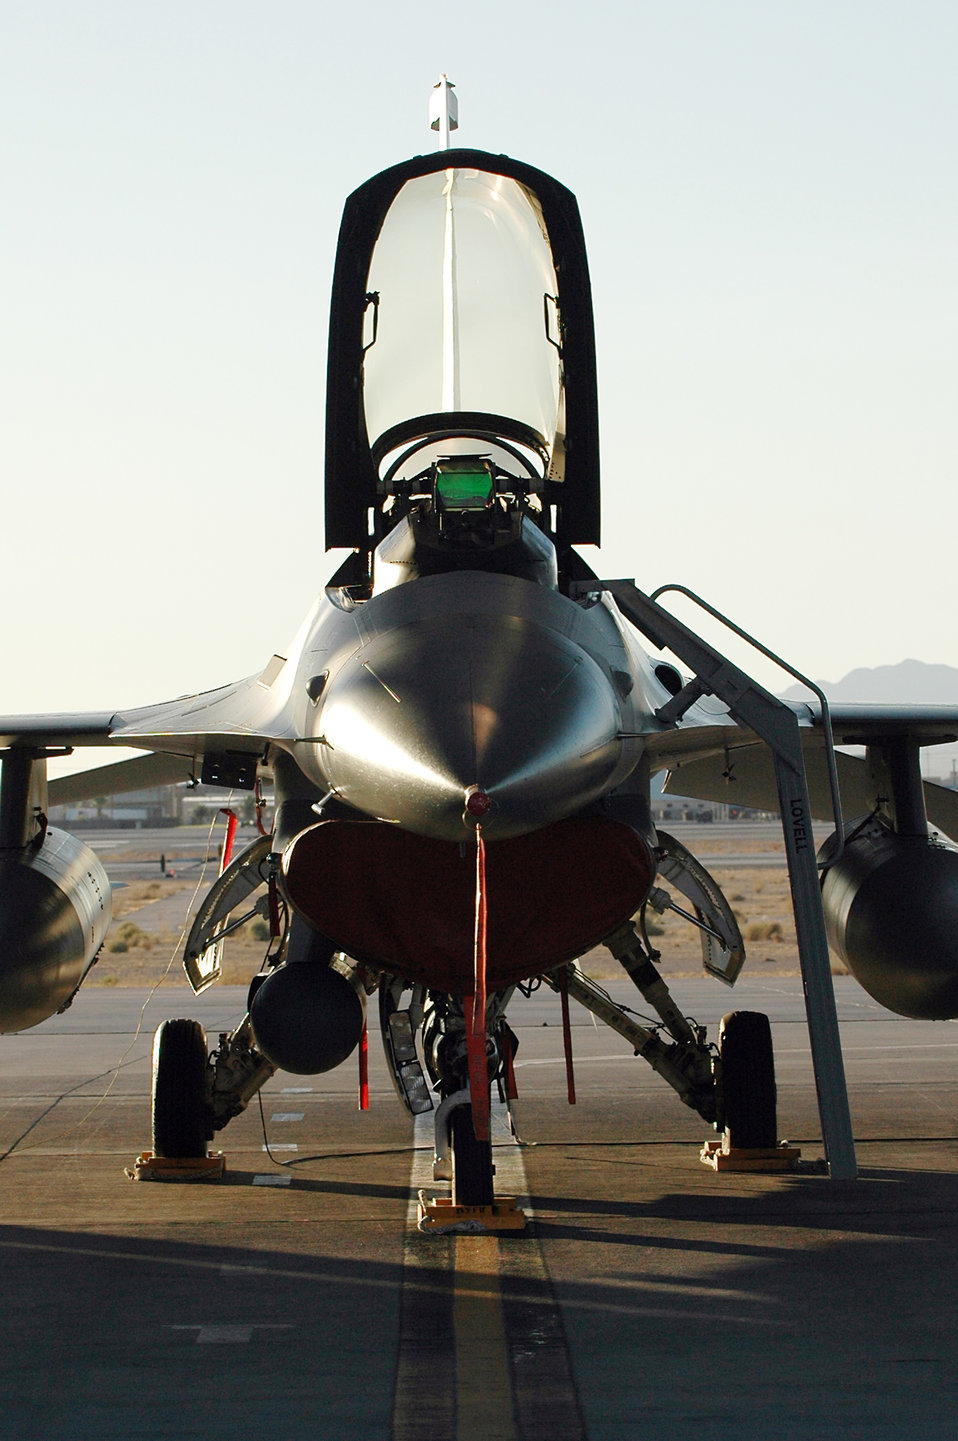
Red Flag

An F-16 Fighting Falcon from the Iowa Air National Guard's 132nd Fighter Wing sits ready during Red Flag 06-02 at Nellis Air Force Base, Nev., on Aug. 15. U.S. and coalition servicemembers are participating in the exercise that concludes today.